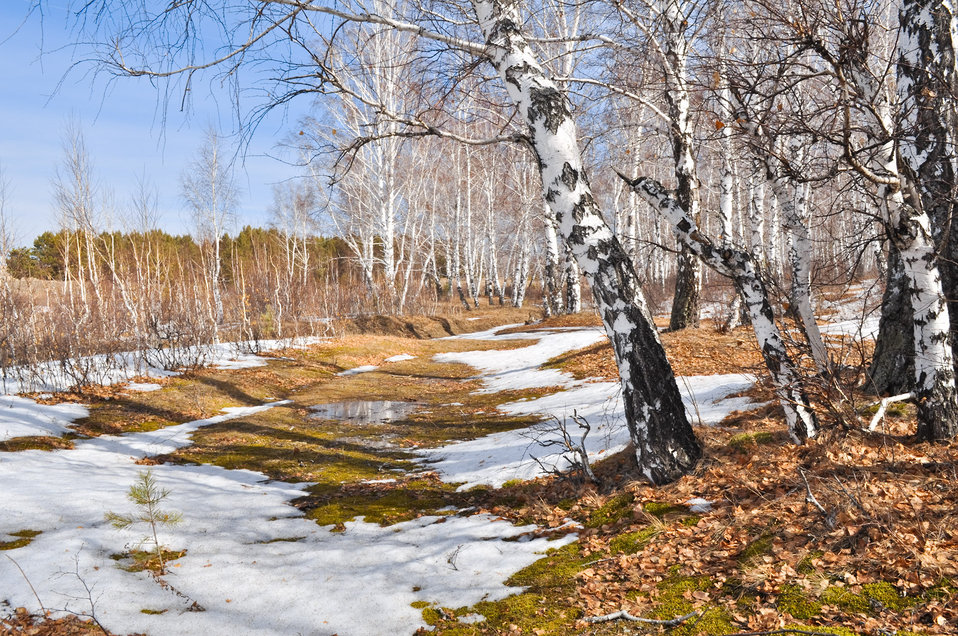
Spring in the woods.